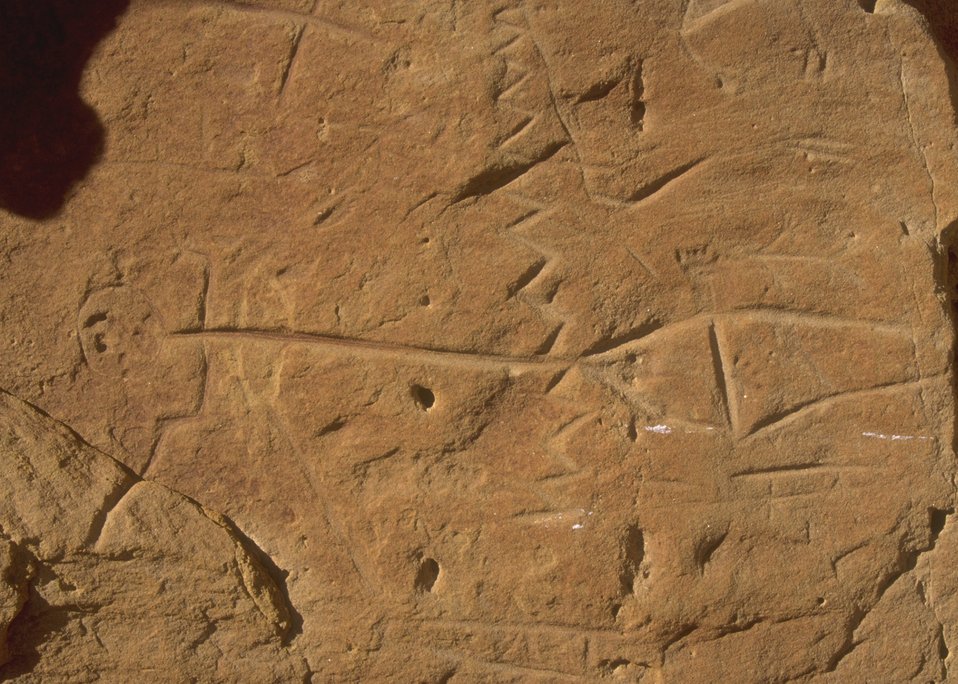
White Mountain Petroglyphs, Rock Springs Field Office.